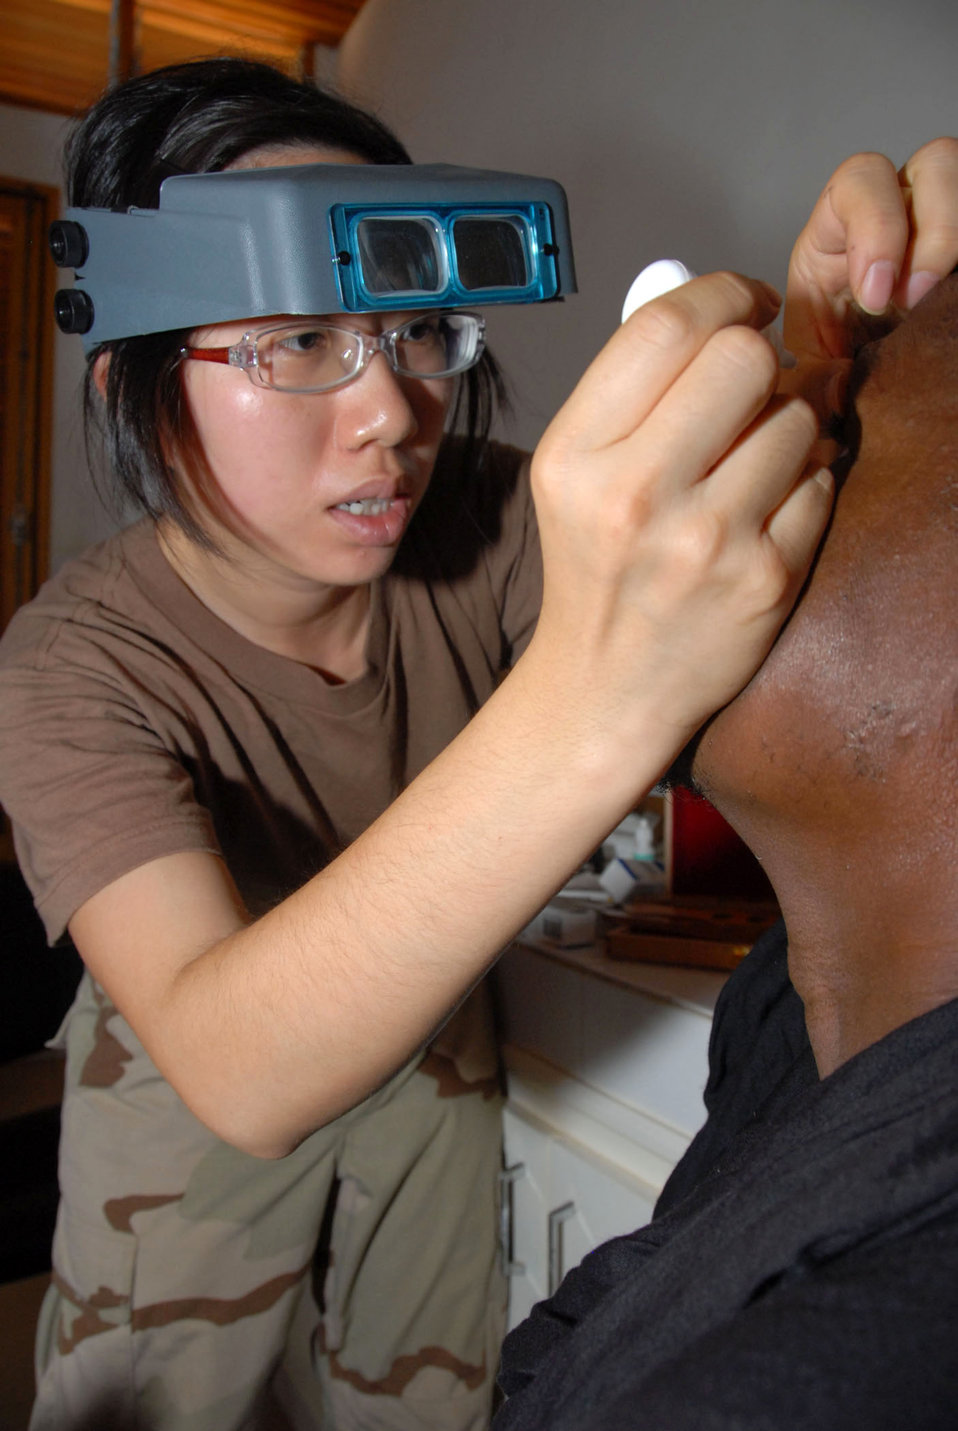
Medics bring relief to Senegal

Capt. (Dr.) Jessica Tsead ministers antibiotic eye drops during an eye examination of a Senegalese patient while she and a group of 14 Reserve medics participated in Shared Accord 07 June 16 to 28 in Linguere, Senegal. Captain Tsead is assigned to the 349th Aeromedical Squadron at Travis Air Force Base, Calif.